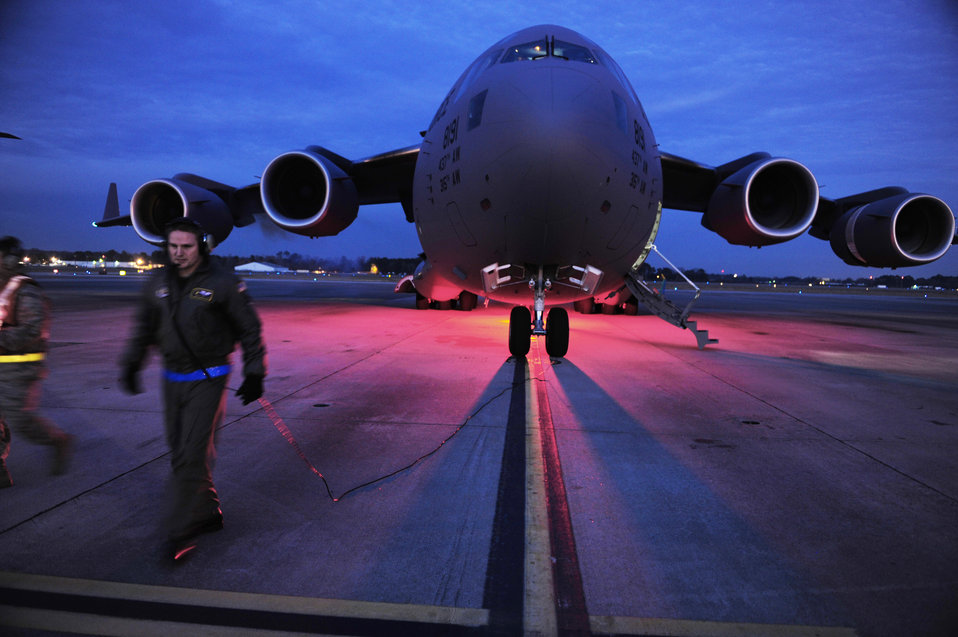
Haiti Relief Operations

Tech. Sgt. Robert Mabry conducts pre-flight duties Jan. 14, 2010, at Charleston Air Force Base, S.C. Sergeant Mabry is a reservist loadmaster with the 317th Airlift Squadron, 437th Air Mobility Wing. Airmen from the 437th Air Mobility Wing are contributing to the relief effort to Haiti.